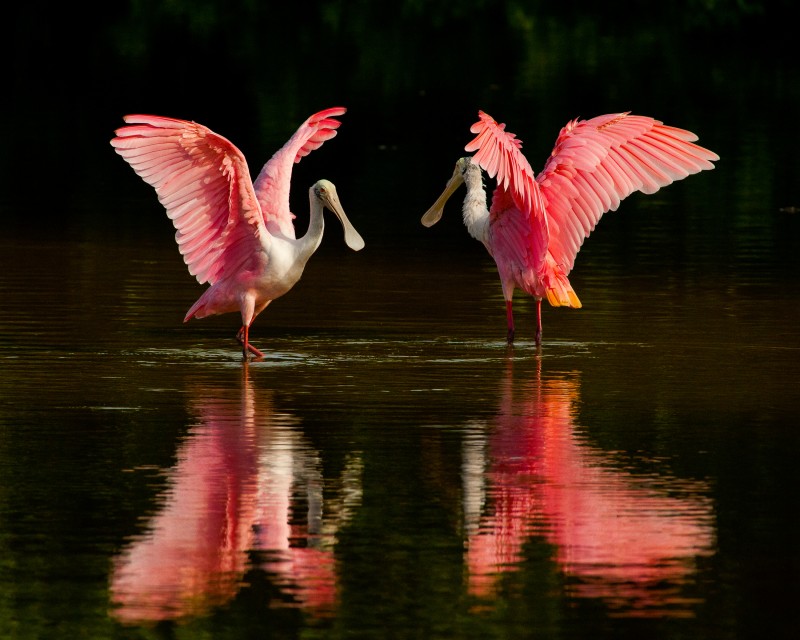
Roseate spoonbills at J.N. 'Ding' Darling National Wildlife Refuge in Florida. Photo: Harold Wagle, finalist, NWRA 2012 photo contest